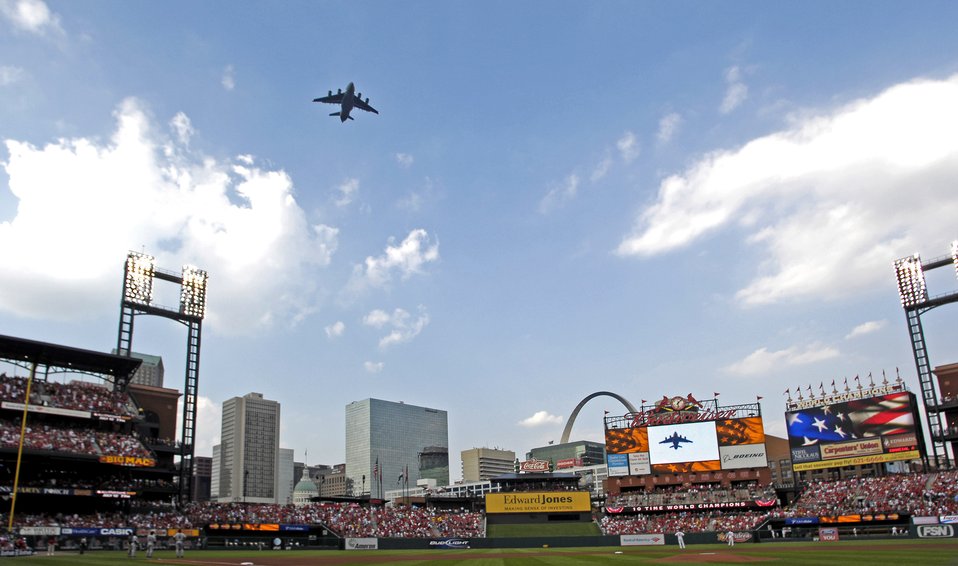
Air Force week in St. Louis

A C-17 Globemaster III flies over Busch Stadium in St. Louis before the Cardinals-Giants baseball game July 7. The flyover was part of Air Force Week St Louis.